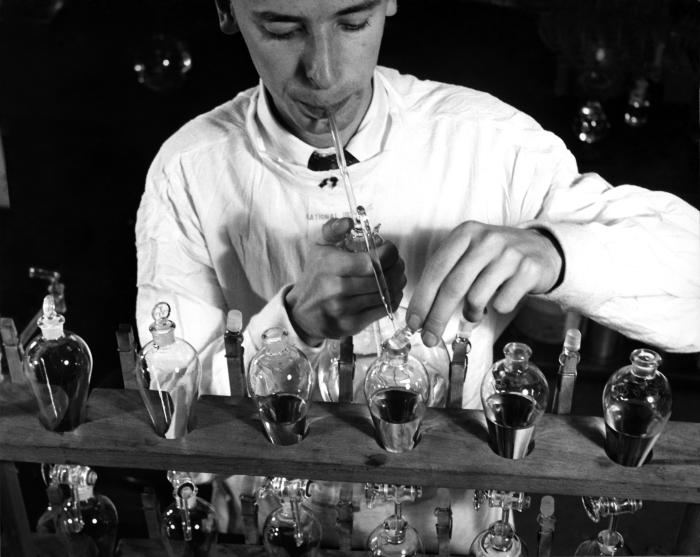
This November, 1943 photograph was provided by the Center for Disease Control's (CDC), National Institute for Occupational Safety and Health (NIOSH). The image depicted an industrial chemist in the process of analyzing a solution in order to determine its lead and zinc content using the chelating agent, dithizone (diphenyl-thiocarbazone). Though it cannot be determined from this image, as to the toxicity of any liberated fumes, this scientist was using no protective breathing accessories, goggles, or gloves, even though he was pipetting liquids using his own breadth, and simultaneously handling the glass beaker stoppers with bare hands.